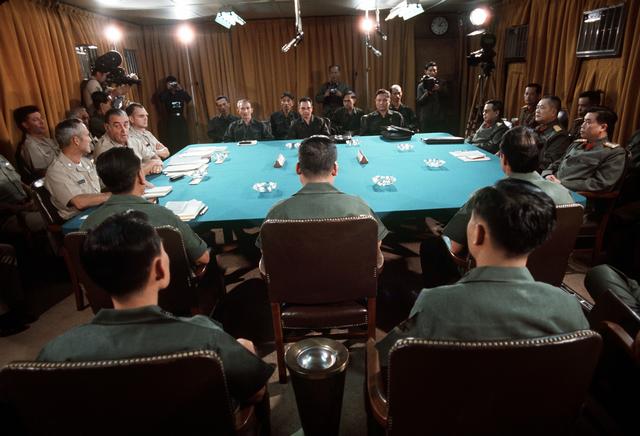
Mission details mark 30th anniversary of POWs' release

TAN SON NHUT AIR BASE, Vietnam -- Members of the Four Party Joint Military delegations hold a conference at Tan Son Nhut Air Base in Vietnam, on Feb. 2, 1973. The delegations included the South Vietnamese delegation with backs to camera, the U.S. delegation on left, the Viet Cong delegation facing the camera and the North Vietnamese delegation on the right. The conference finalized details on the release of prisoners of war held by the four parties.s.